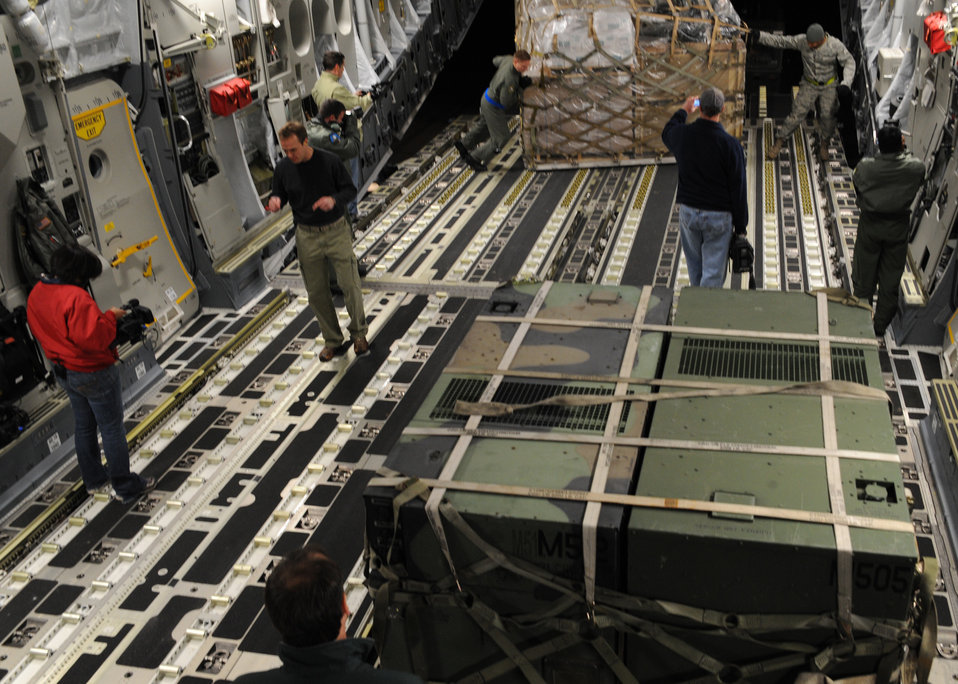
Haiti Humanitarian Effort

Equipment is loaded onto C-17 at Joint Base McGuire-Dix-Lakehurst, New Jersey, Jan. 15, 2010. The Charleston C-17 was used to transport equipment needed to aid the humanitarian effort in Haiti.